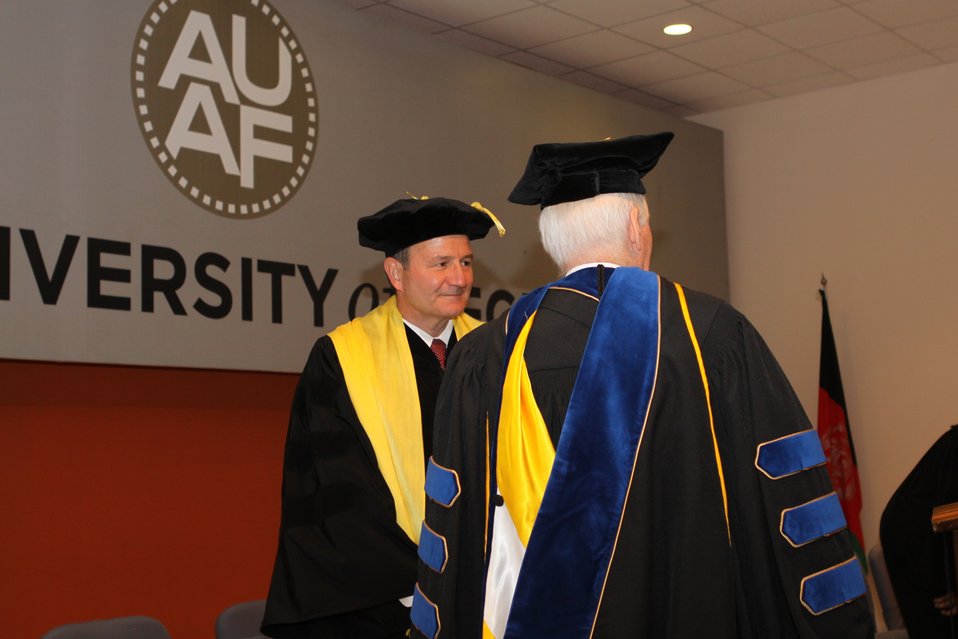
100526 AUAF Graduation 116